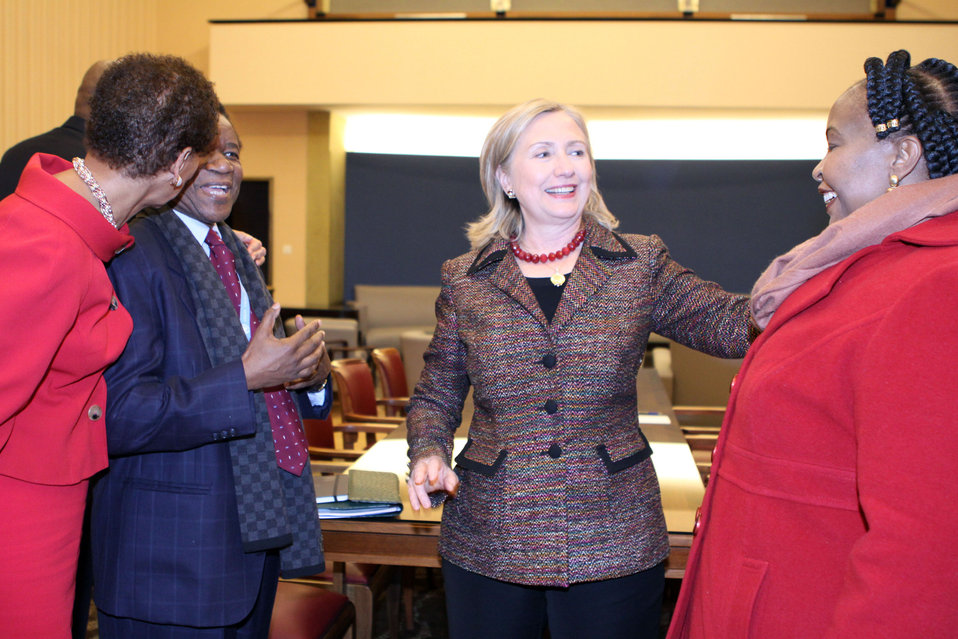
Secretary Clinton Meets With South African Foreign Minister Nkoane-Mashabane

U.S. Secretary of State Hillary Rodham Clinton meets with South African Foreign Minister Maite Nkoane-Mashabane at the United Nations Office at Geneva, Switzerland, on February 28, 2011.